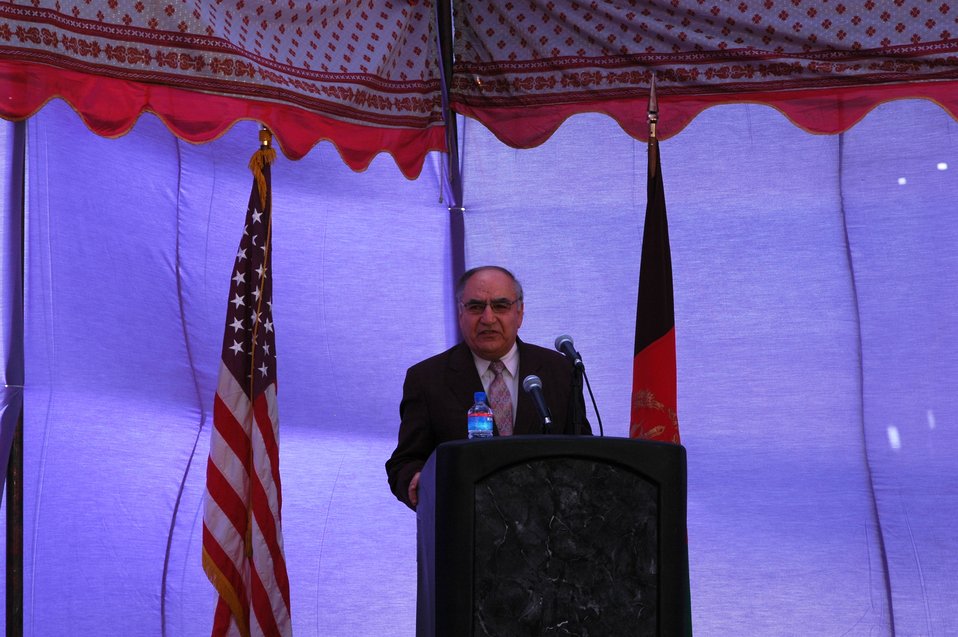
105 MW Tarakhil Power Plant Handover